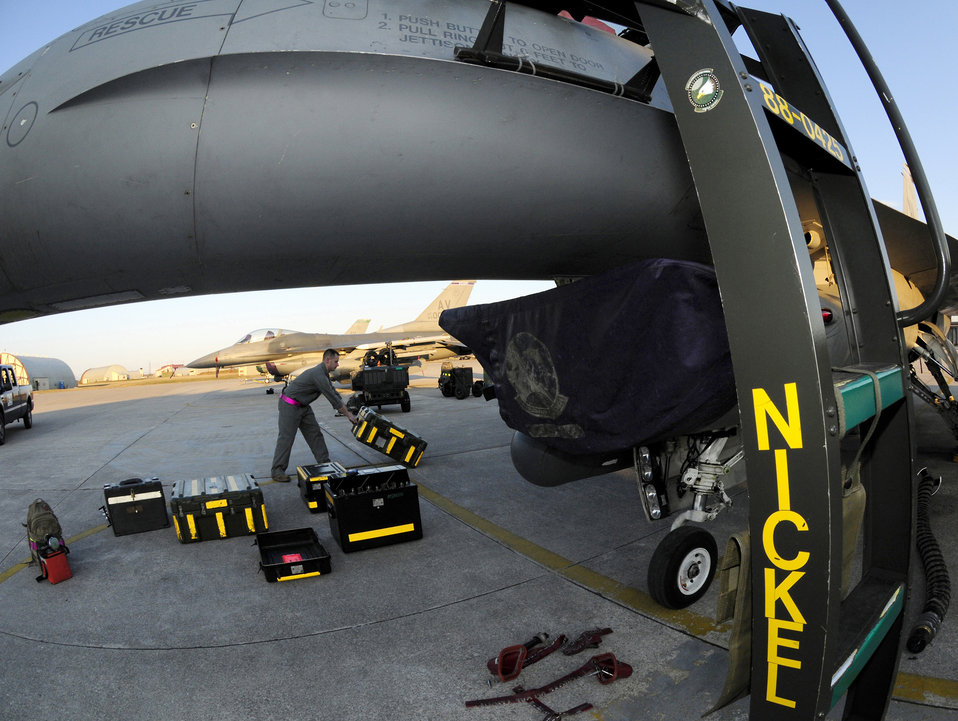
Odyssey Dawn

Staff Sgt. Bryan Holloway, 510th Aircraft Maintenance Unit avionics craftsman, prepares to perform scheduled radar threat warning maintenance on an F-16 Fighting Falcon March 21, 2011, at Aviano Air Base, Italy. The aircraft will deploy in support of Operation Odyssey Dawn. Joint Task Force Odyssey Dawn is the U.S. Africa Command task force established to support the larger international response to the unrest in Libya. A broad coalition of nations are partnering to enforce U.N. Security Council Resolution (UNSCR) 1973, which authorizes all necessary means to protect civilians in Libya under threat of attack by Qadhafi regime forces. JTF Odyssey Dawn is commanded by Admiral Samuel J. Locklear, III.